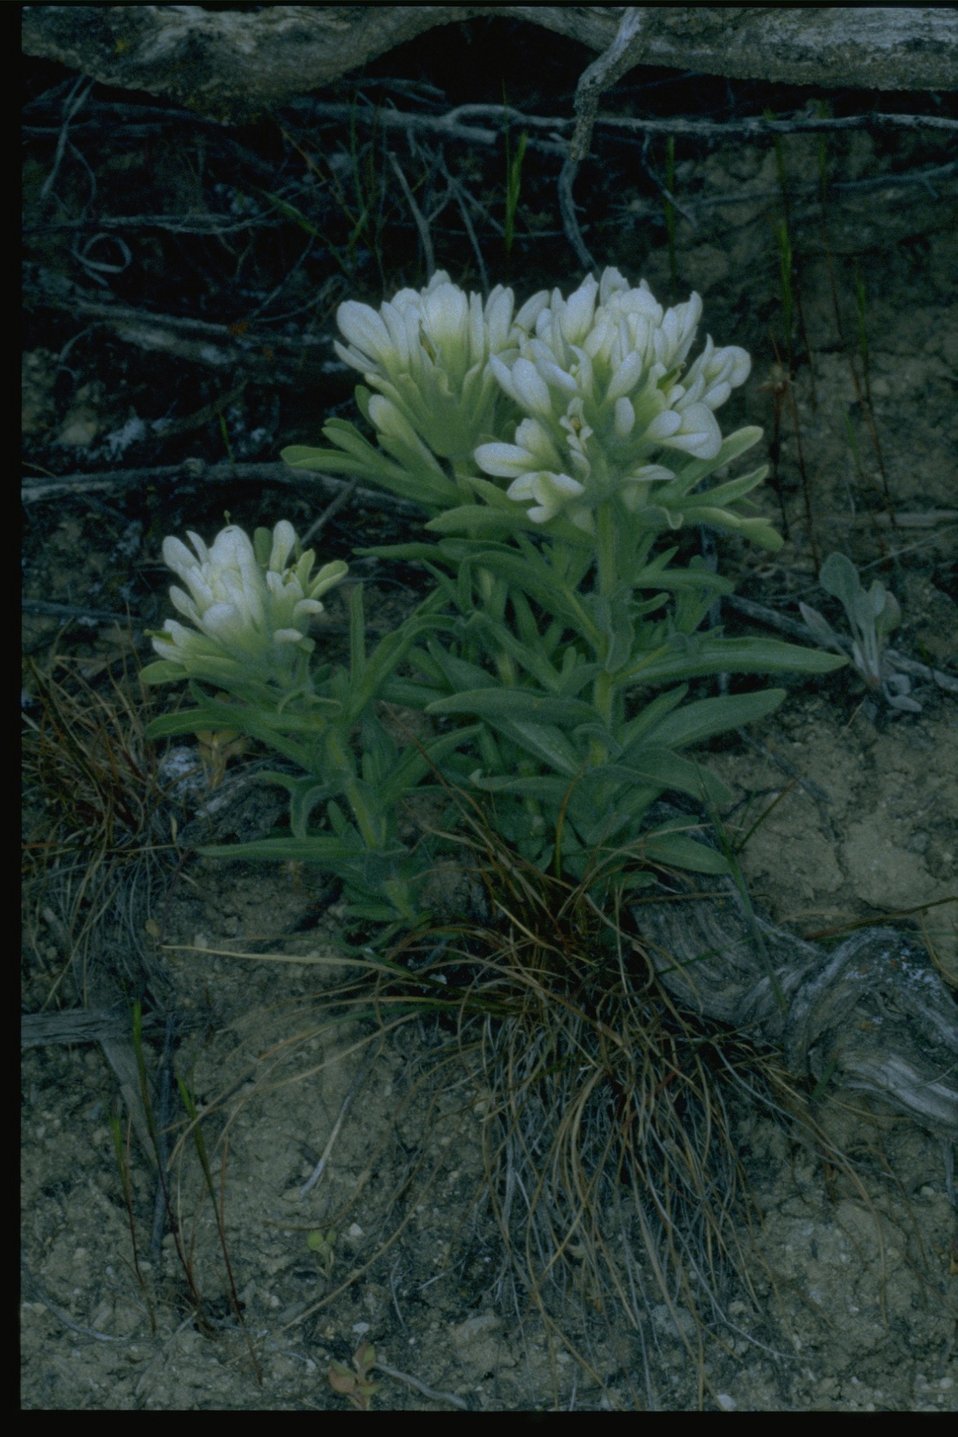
Medium shot of Milkvetch wildflower.